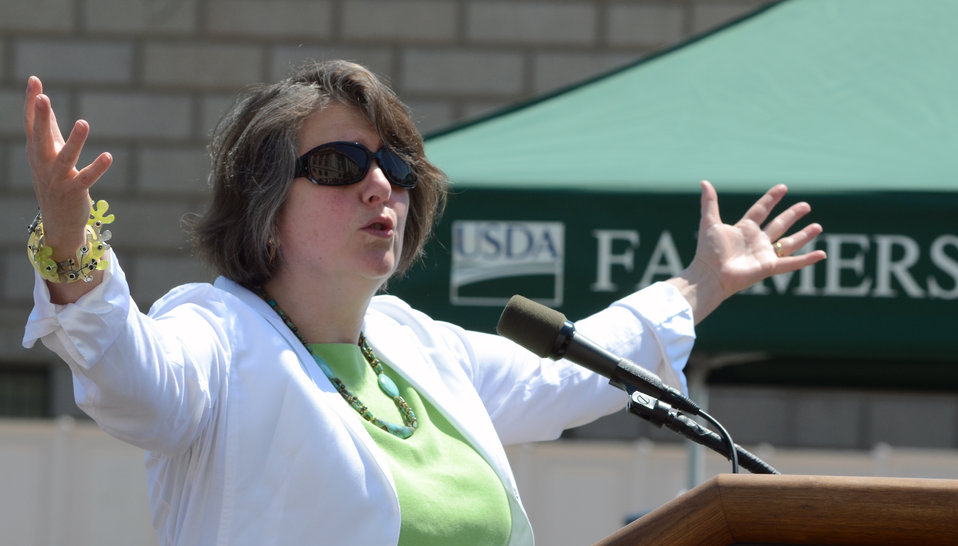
Agriculture Deputy Secretary Kathleen Merrigan encourages USDA employees to donate food at the USDA kickoff event for Feds Feed Families at the U.S. Department of Agriculture Farmers Market in Washington, D.C., on Friday, June 8, 2012.